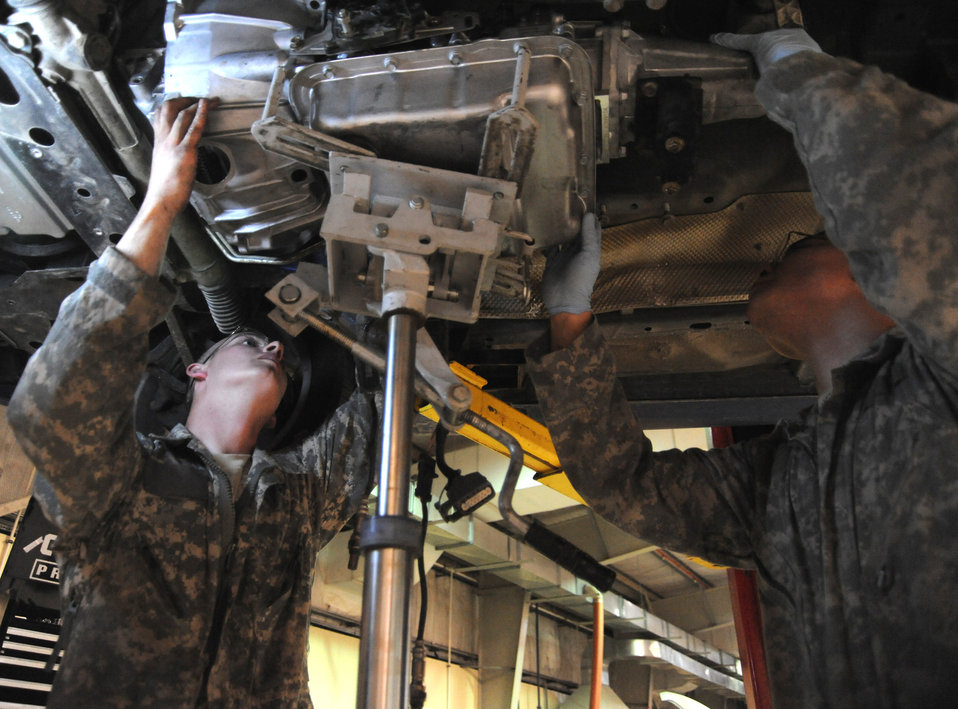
Let's get it started

Senior Airman Adam Owens and Senior Airman Michael Jakubec raise up a new transmission into a Pontiac GTO April 26 at an air base in Southwest Asia. The GTO is used as a chase car to help guide U-2 pilots during takeoffs and landings. Airmen Owens and Jakubec are 380th Expeditionary Logistics Readiness Squadron vehicle maintenainers. Airman Owens is deployed from the 174th Air National Guard Base from Hancock Field, N.Y. Airman Jakubec is deployed from Kadena Air Base, Japan.